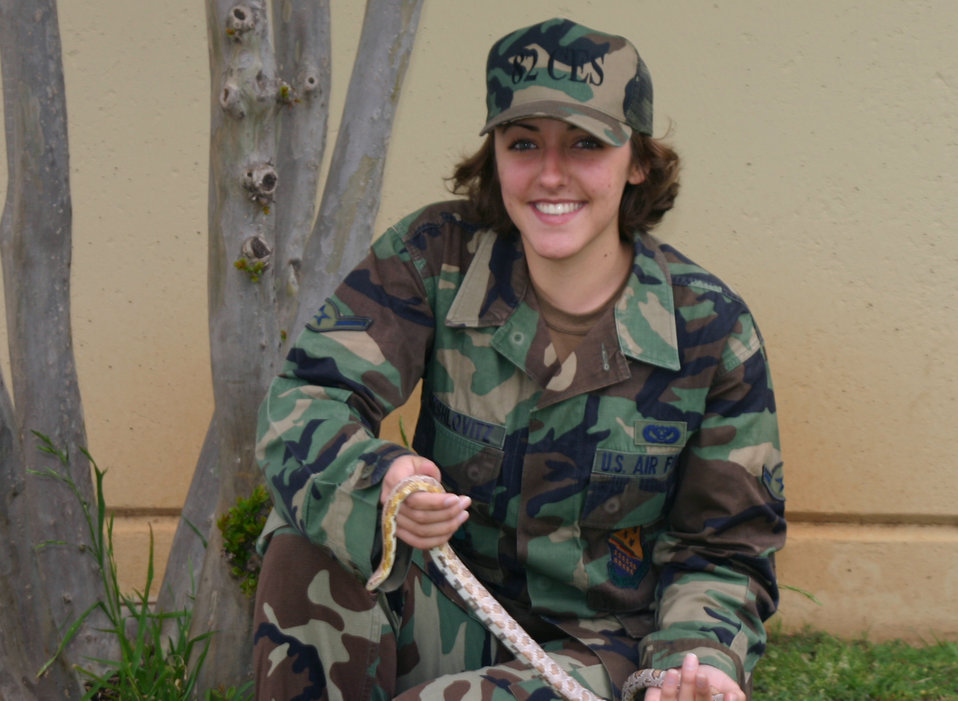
Airman gets perfect scores on CDC exams

SHEPPARD AIR FORCE BASE, Texas - Airman Melynda Meshlovitz received perfect scores on two of her career development course exams. She is the 23rd person in the Air Force and the first in her career field to score 100. She is assigned to the 82nd Civil Engineer Squadron here.